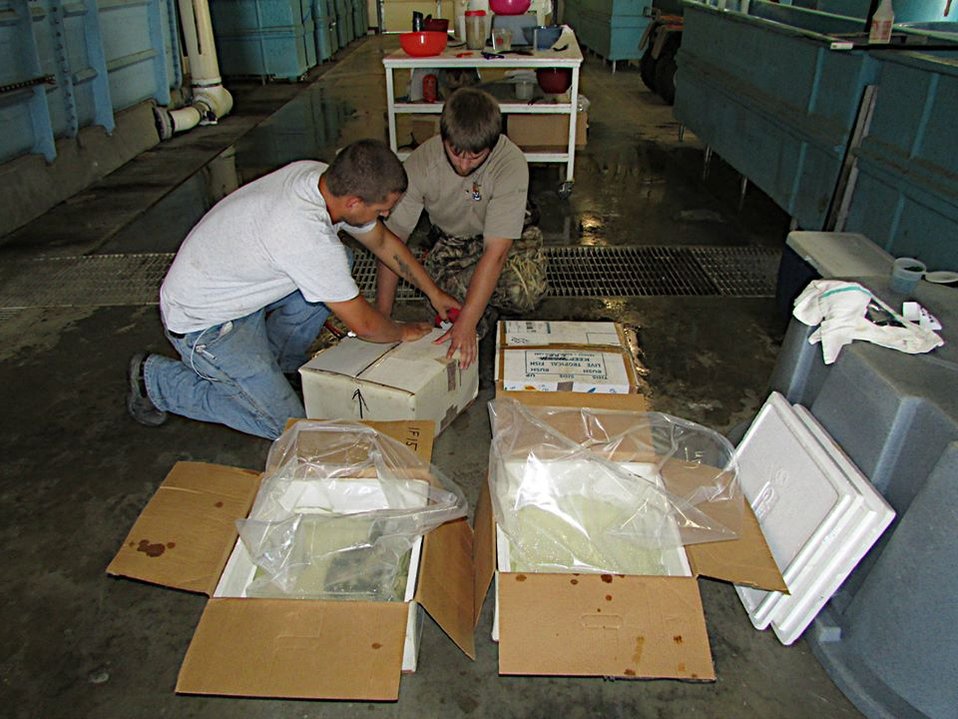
Delicate Items

We ship eggs and fry all over the Midwest, and people are usually surprised by how we do it. The truth is, it's nothing fancy. We use cardboard boxes, Styrofoam coolers and plastic bags filled with plenty of water and oxygen.

Here is a picture from last September when were getting ready to transport pallid sturgeon eggs from Miles City, MT to Yankton, SD.